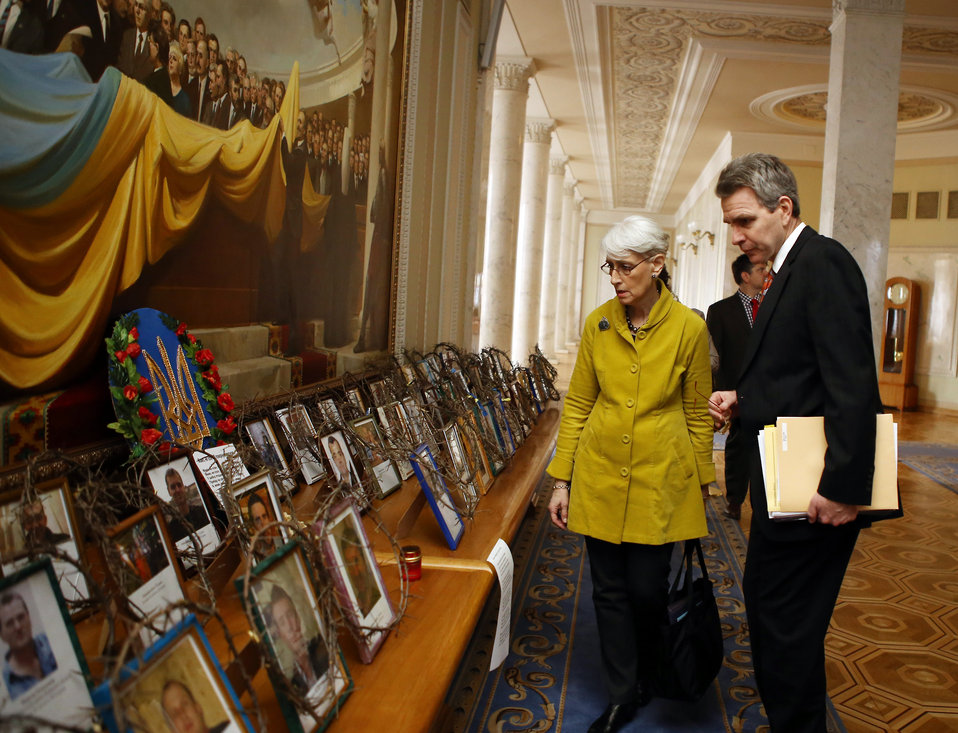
Under Secretary Sherman Views Photos of Those Killed at Maidan

With U.S. Ambassador to Ukraine Geoffrey Pyatt, Under Secretary of State for Political Affairs Wendy Sherman looks at the photos of those killed at Maidan, at the Verkhovna Rada in Kyiv, Ukraine, on March 20, 2014.